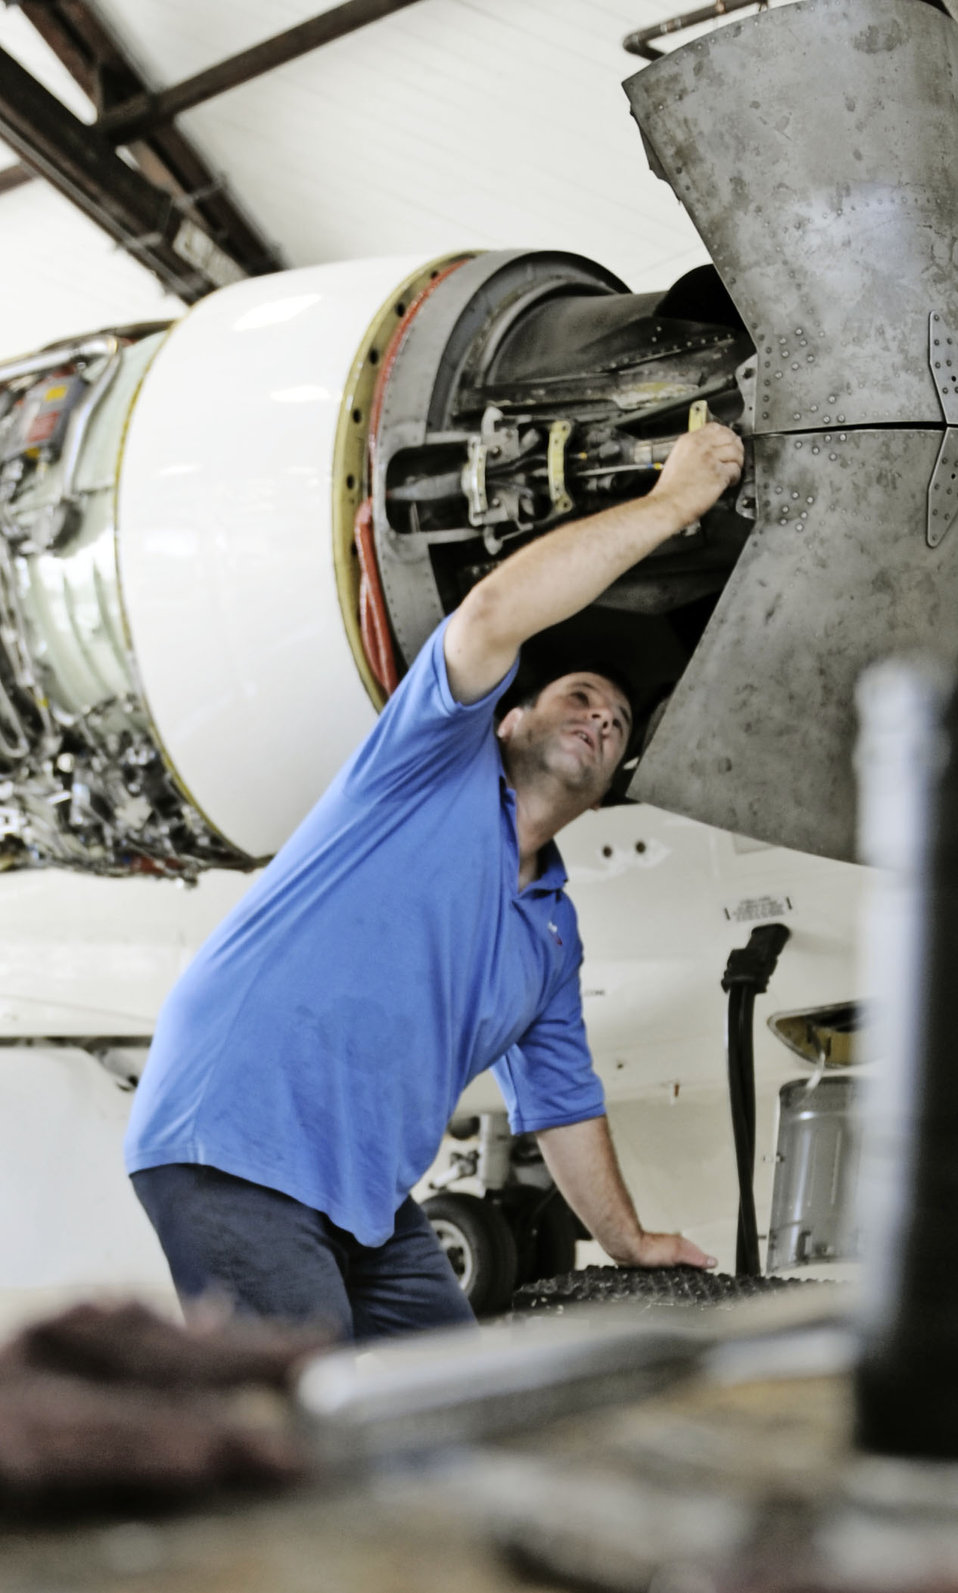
C-21 phase inspection

Eric Bollinger works on a C-21 during a phase inspection Sept. 16, 2010, at Scott Air Force Base, Ill. The phase inspections are done on aircraft after they reach flying milestones to ensure the aircraft remain in tip-top shape. Mr. Bollinger is a contractor with DynCorp International.